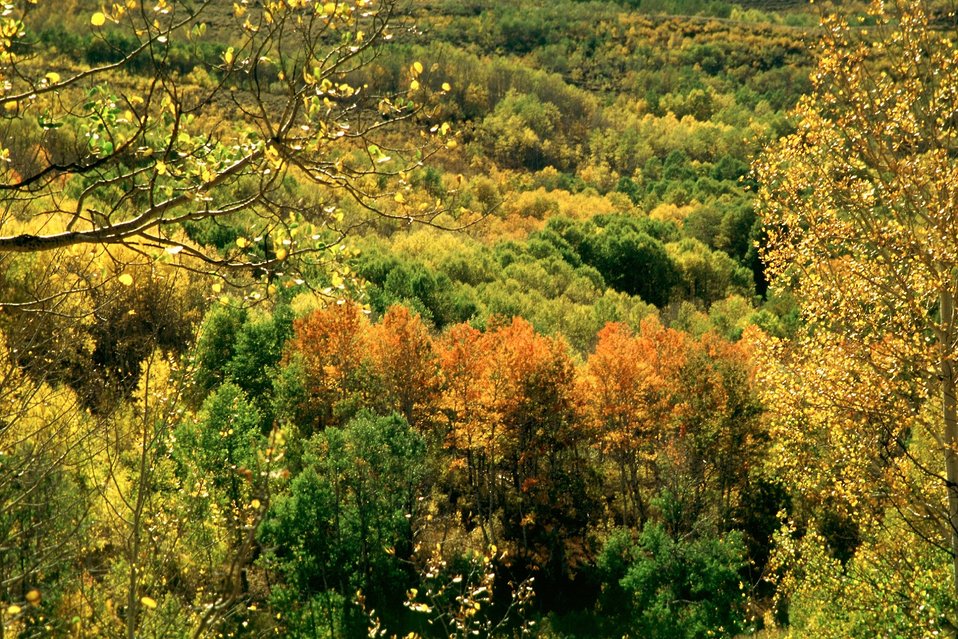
Aspens at Fish Creek, Steen's Mountain.